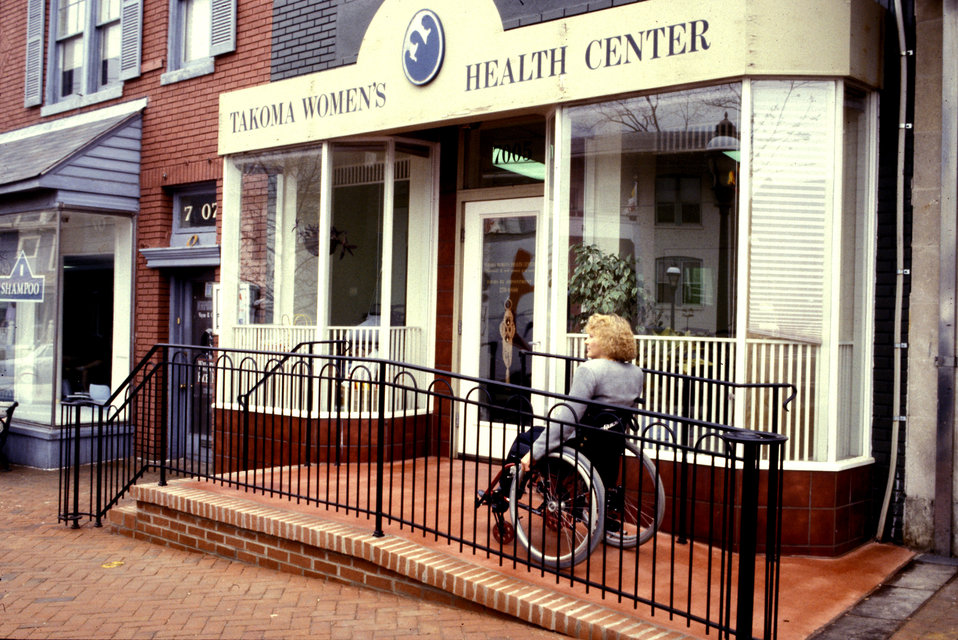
In this 1993 image, the front of a women's clinic revealed a front door that had been accessible via a two-step stoop, which made accessibility an issue for the mobility-challenged visitors (PHIL 9018 - 9021). This prompted the installation of a temporary plywood ramp at first (PHIL 9022 - 9026), which was later replaced by the permanent mortar and brick ramp seen here, as it was being used by a wheelchair-seated visitor (also see PHIL 9027 and 9029). This concrete structure was not the perfect solution, for it lacked adequate maneuvering room near the clinic doorway. It also clearly appeared as an add-on, or after-the-fact solution that protruded into the wide sidewalk, while attempting to blend in with the existing buildings by using brick, colored concrete, and wrought iron rails. Stairs had also been provided.